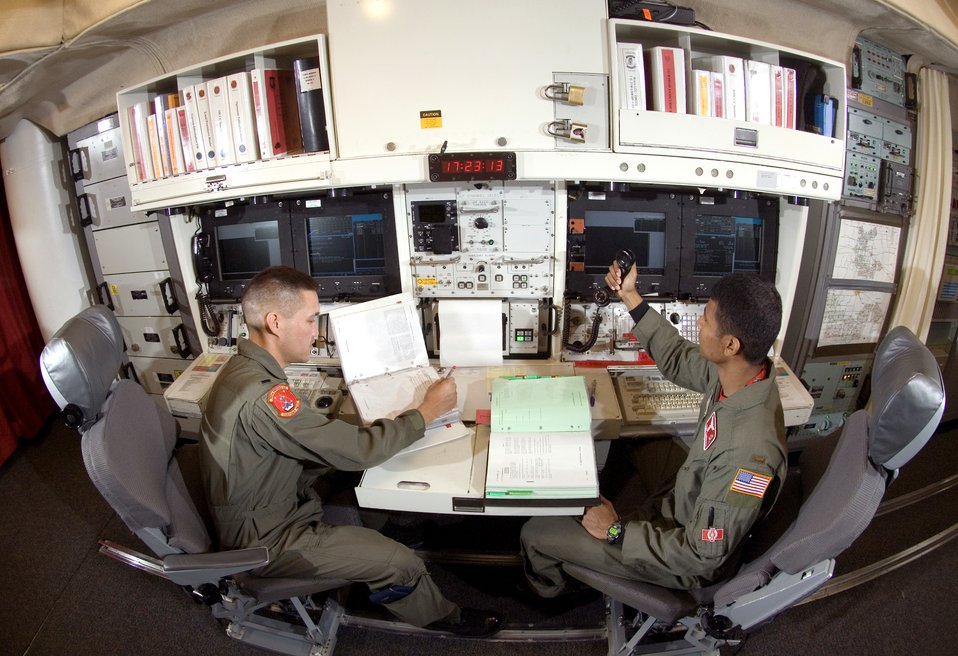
Missile squadron poised for 72-hour alerts

Typically, a two-person missile combat crew is on alert in an underground launch control center for 24 hours at a time monitoring their ICBMs, ready to launch them if directed. Under a test being conducted by 20th Air Force officials, three-person crews are going to pull 72-hour alerts at select facilities to weigh the advantages of going to such a schedule. Officials from 20th Air Force will evaluate the test after three months to determine whether to implement the initiative across the entire missile force.